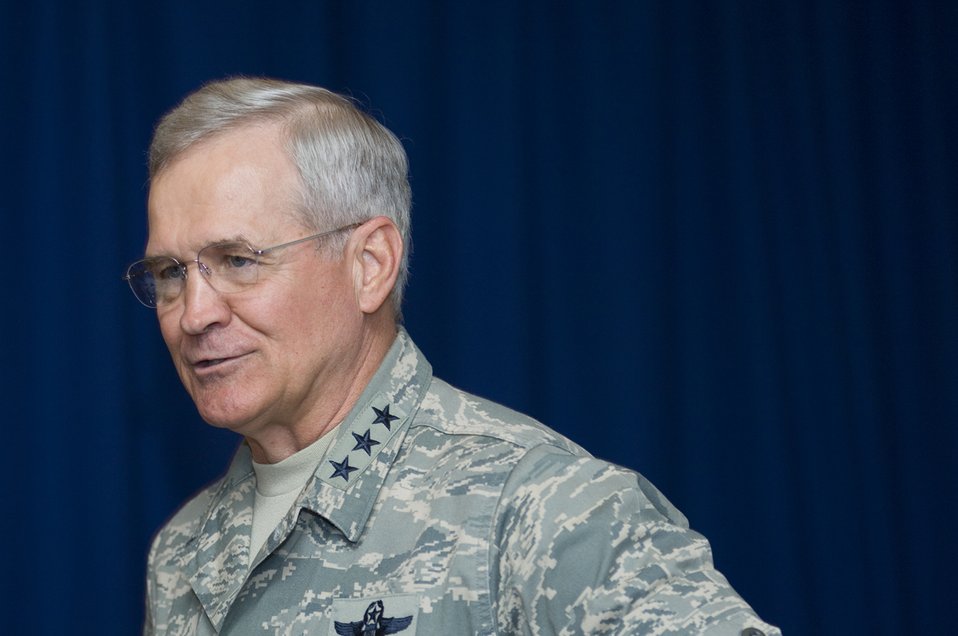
Officials explain humanitarian operations during Air Force Week in Philadelphia

Lt. Gen. Christopher A. Kelly speaks to Airmen and community leaders about hope the Air Force has provided worldwide through humanitarian operations during the Global Presence Seminar held May 29 at the National Liberty Museum in Philadelphia. The seminar held during Air Force Week in Philadelphia highlighted heroism and humanitarian actions by the Air Force worldwide. General Kelly is the vice commander of Air Mobility Command from Scott Air Force Base, Ill.